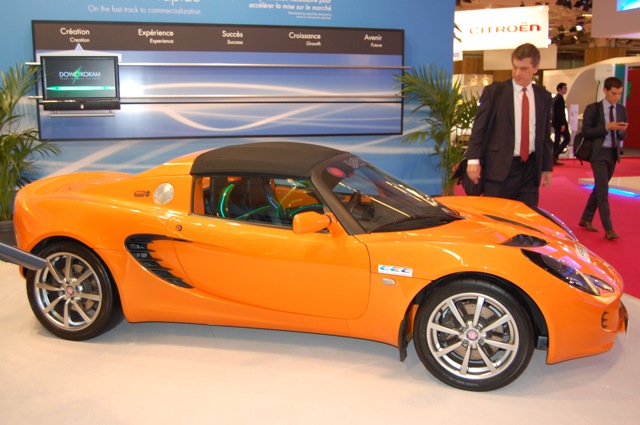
David Sandalow at the Paris Auto Show